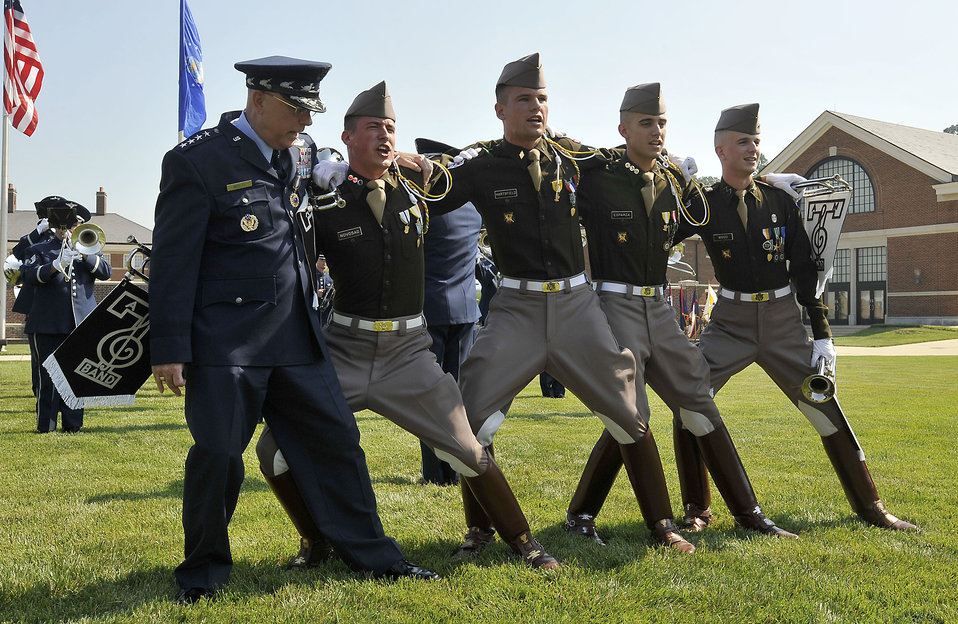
CSAF Retirement Ceremony

Air Force Chief of Staff Gen. T. Michael Moseley joins cadets from his alma mater, Texas A&M University, during his retirement ceremony July 11 at Bolling Air Force Base, D.C.